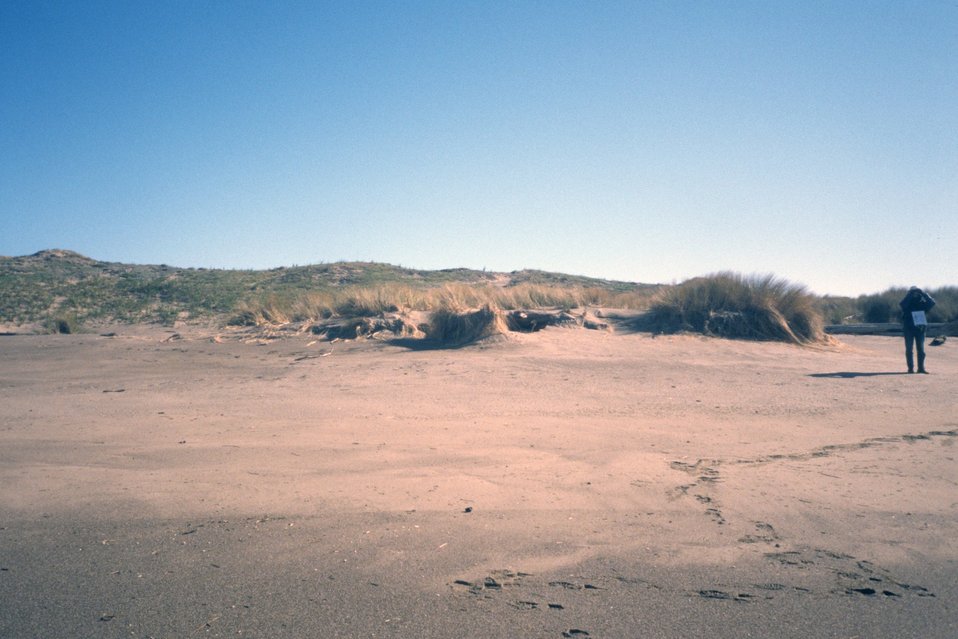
Point Reyes Great Beach